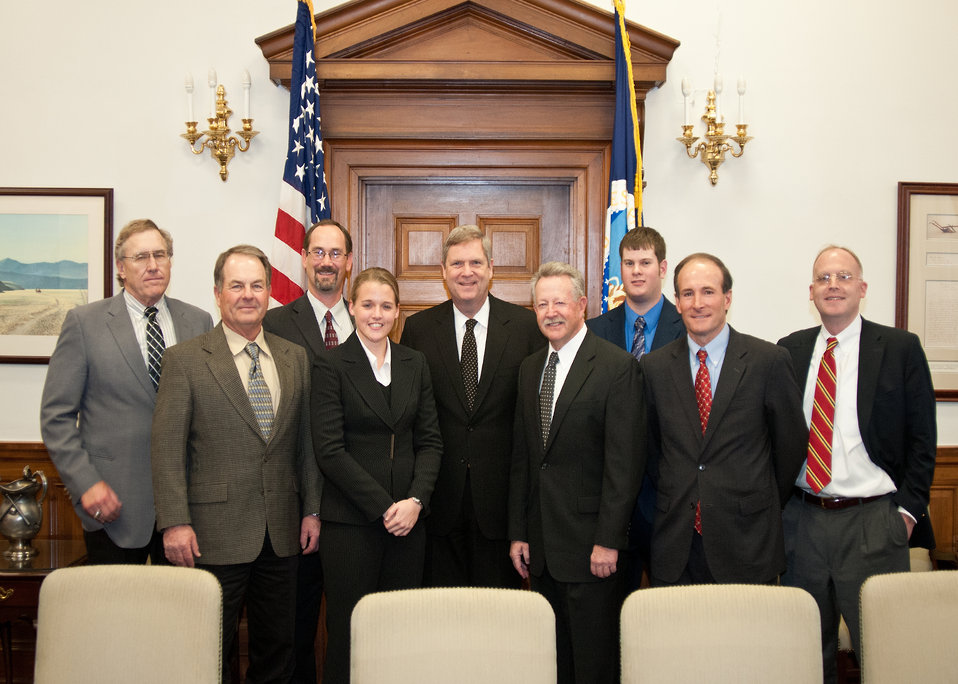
Agriculture Secretary Tom Vilsack met with the National Sorghum Producers at the United States Department of Agriculture in Washington, D.C., on Wednesday, February 8, 2012. From left: Dan Smith, Lockney, Texas, Stan Fury, Grady, New Mexico, Tim Lust, Lubbock, Texas, Dianna Fisher, Colorado, Secretary Tom Vilsack, Terry Swanson, Walsh, Colorado, Morgan McNeil, Paradise, Kansas,Ted Schneider Lake Providence, Louisiana and Jeff Harrison, Washington.